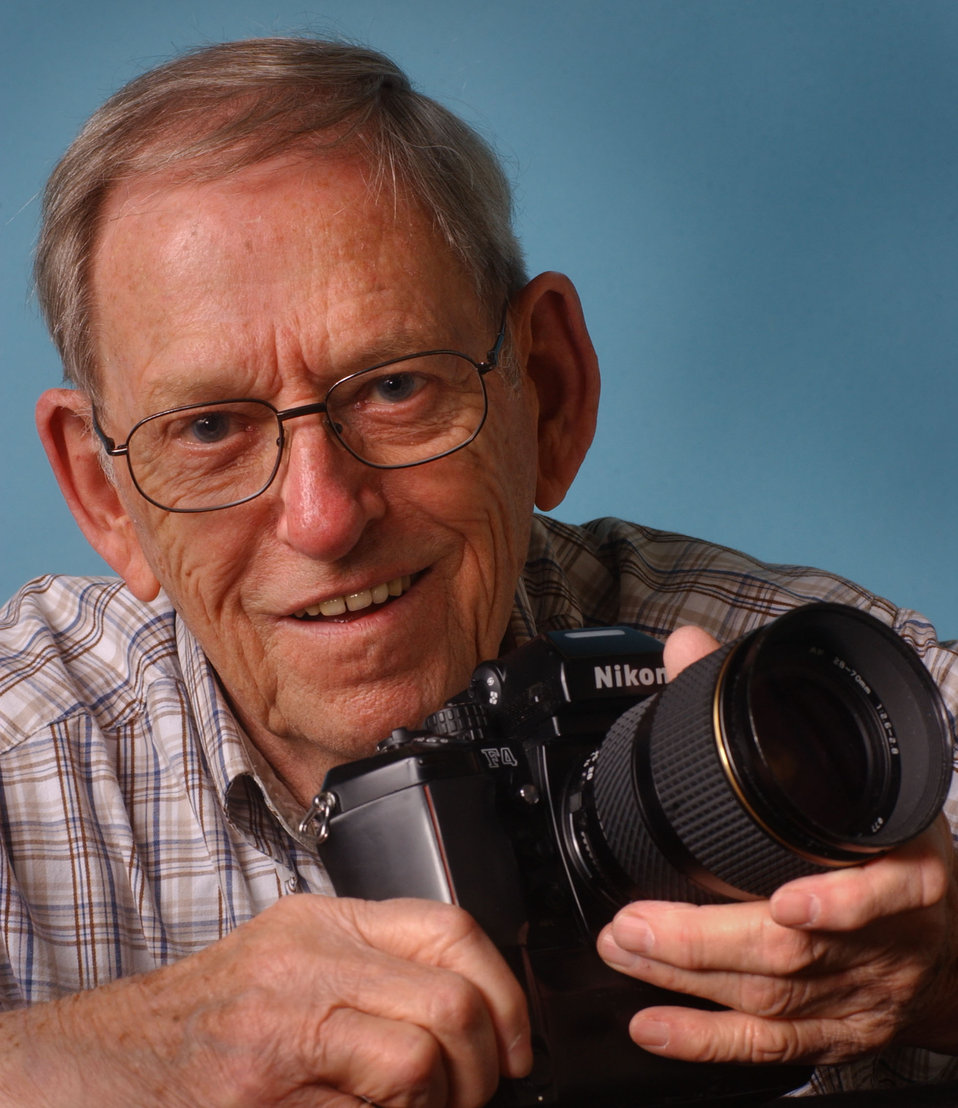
AEC Manhattan photographer Ed Westcott Oak Ridge

05-137b DOE photo by Lynn Freeny

AEC Manhattan photographer Ed Westcott Oak Ridge Tennessee 2005